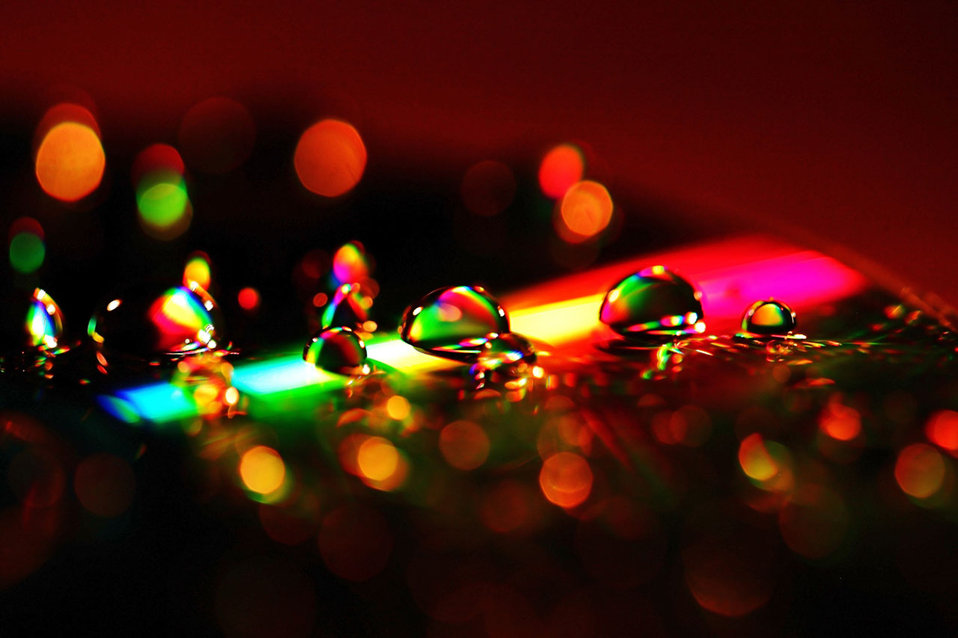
Rainbow drops

Water drops on a cd illuminated by a flash light..